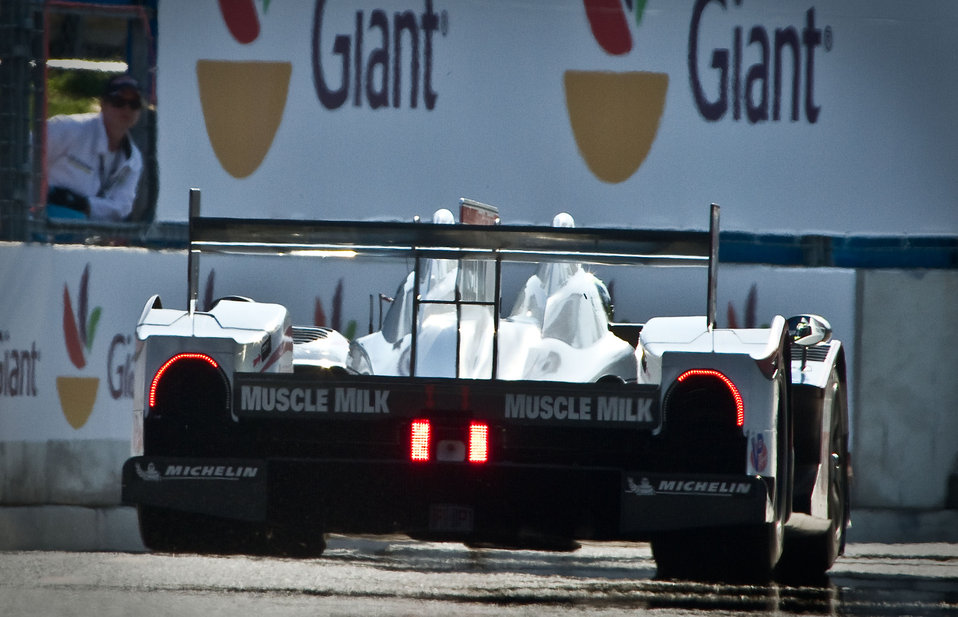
The Number 6, HPD ARX-03a of the Muscle Milk Pickett Racing (P1) use E10 fuel for the American Le Mans Series (ALMS) motorsport series at the Baltimore Grand Prix, on the streets of downtown Baltimore, MD, on Friday, August 31, 2012, Labor Day Weekend. ALMS says they are “the Global Leader in Green Racing by being the only racing series recognized to comply with the Green Racing protocols developed by the U.S. Department of Energy (DOE), the U.S. Environmental Protection Agency (EPA) and Society of American Engineers International (SAE).” Instead of high-octane gasoline all the cars in the series use one of 5 different forms of energy (system). Clean diesel, E85, E10, isobutanol or hybrid energy technology. The specific hybrid system, used by the Porsche GT3 cars, are a (battery-less) flywheel-based Kinetic Energy Recovery Systems. These organizations are accelerating technology development at speeds up to 200 mph, in 650-700 horsepower race cars that are based on two groups of cars; the purpose built prototype race cars and the GT
(Grand Touring) cars based on production sports cars that you can see in showrooms. From these groups, there are five classes of cars, all of which race at the same time during the race events.
The U.S. Department of Agriculture (USDA) focuses on renewable fuel sources that are profitable and sustainable. 2011 accomplishments include research and planning for renewable energy and investments in renewable energy production.
- Completed a Biofuels Roadmap proposing a plan of action to meet congressionally mandated RFS2 goals for national biofuels production.
-Coordinated five regional research centers to work on the science necessary to ensure profitable biofuels can be produced from a diverse range of feed stocks across the nation, not just in the Midwest where the industry is already thriving.
-Over three years, USDA invested about $320 million to accelerate research on renewable energy ranging from genomic research on bioenergy feedstock crops, to development of biofuel conversion processes and costs/benefit estimates of renewable energy production.
- More than 130 biodiesel and ethanol projects funded by USDA are currently producing almost 3.7 billion gallons of biodiesel and ethanol annually, enough fuel – in equivalence to gasoline – to keep five million vehicles on the road every year.
-We are supporting efforts to build five biorefineries to produce advanced biofuels in states from Florida and Michigan to New Mexico, with investments worth about $310 million. We are supporting facility upgrades and feasibility studies for advanced biofuels projects in every region of the country.